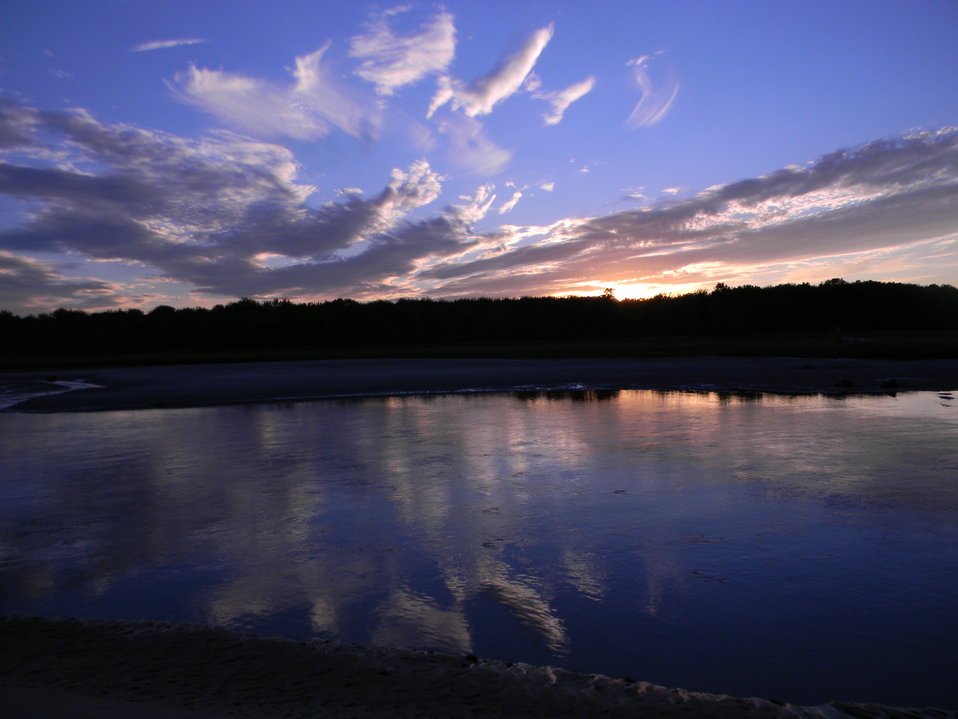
Sunset

Photographed at Rachel Carson National Wildlife Refuge.